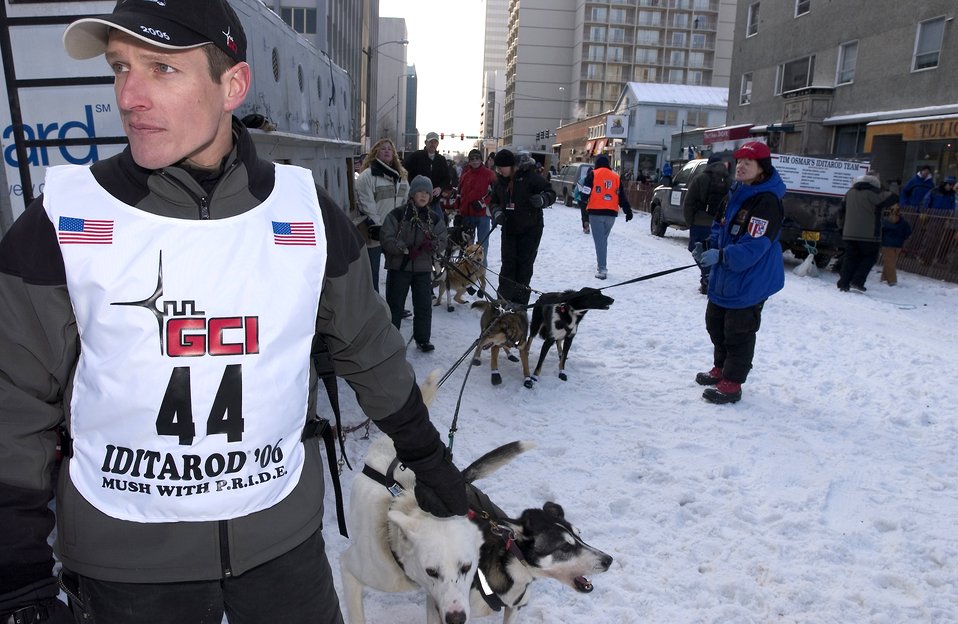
2006 Iditarod

Major (Dr.) Thomas Knolmayer waits for the signal to lead his 16-dog team to the ceremonial starting line of the 2006 Iditarod Sled Dog Race in downtown Anchorage, Alaska, Saturday, March 4, 2006. This is the second year in a row Dr. Knolmayer has run the Iditarod after becoming the first active-duty servicemember to ever complete the 1,150-mile race last year. The race ends in Nome and Dr. Knolmayer expects to spend 11 to 14 days running the race that is equal to the distance of New York to Orlando, Fla.